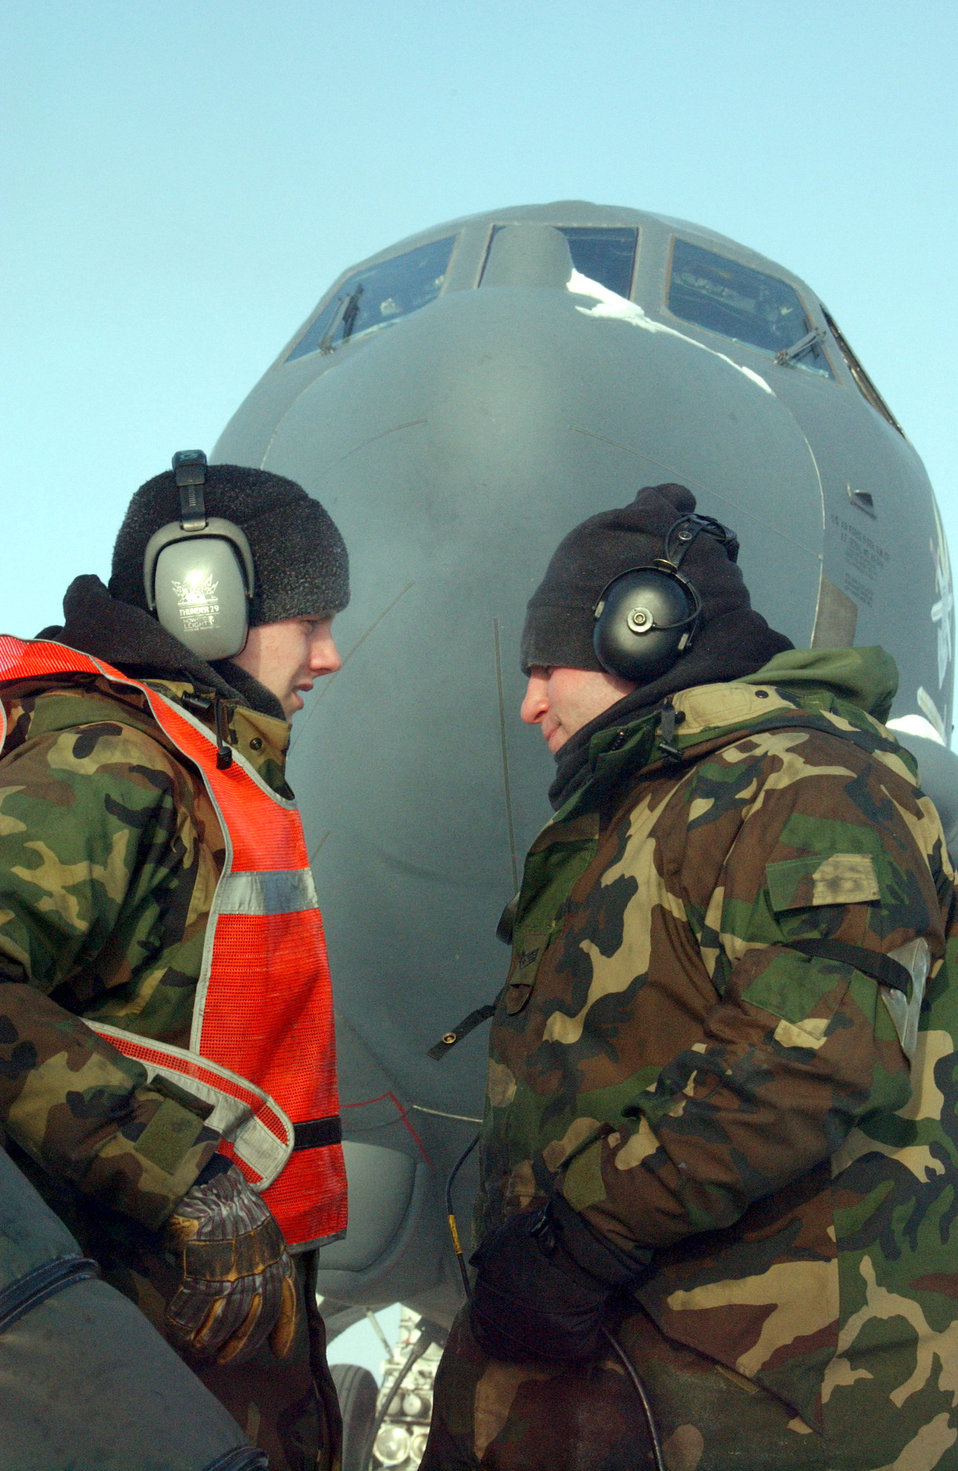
Cold-weather mission

MINOT AIR FORCE BASE, N.D. -- Airman 1st Class Robert Gray (left) and Staff Sgt. Scott West discuss procedures before a mission launch of a B-52H Stratofortress here Jan. 27. The mission was flown despite weather conditions of minus 45 degrees with wind gusts of 27-plus mph. Both airmen are crew chiefs with the 5th Aircraft Maintenance Squadron.